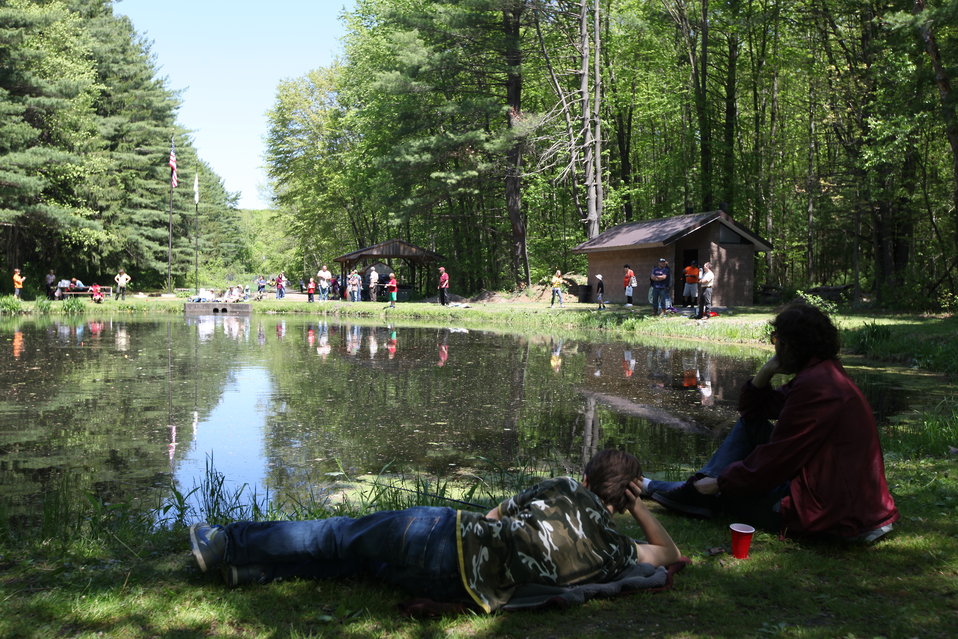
Youth Fishing Derby 2012

Megan Nagel/USFWS